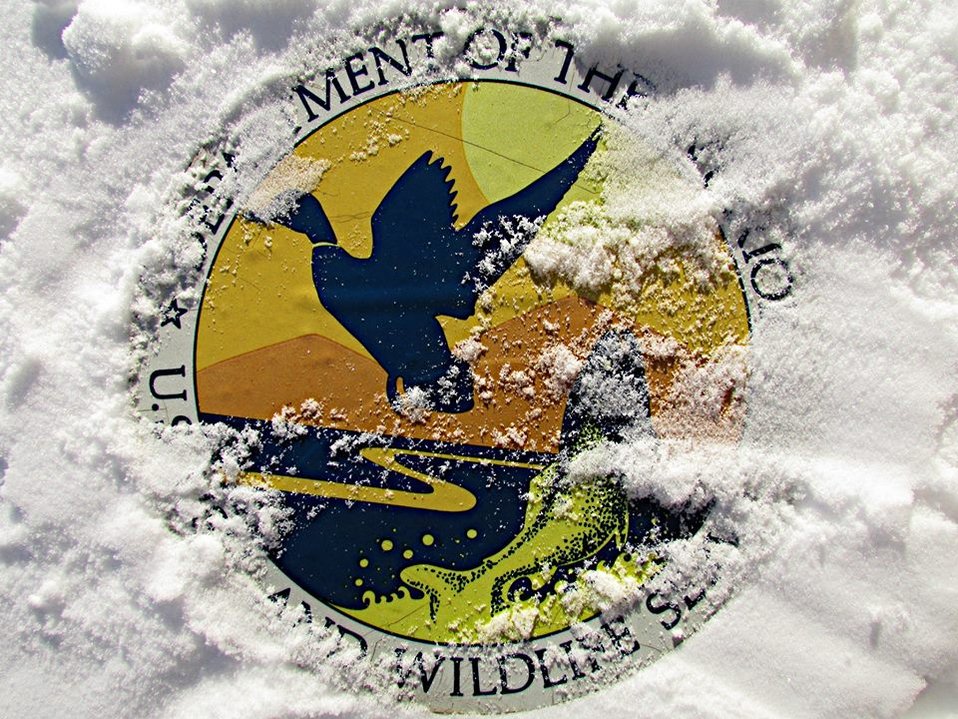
Long Winter

It was yet another morning with single digit temps. Is spring coming anytime soon?